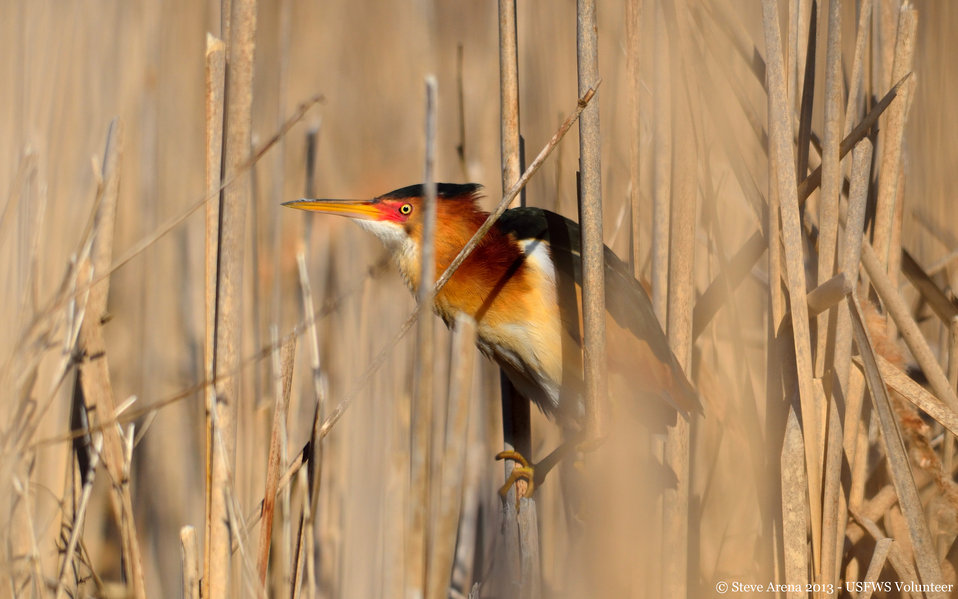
Least Bittern (Ixobrychus exilis) - male

Least Bittern, Great Meadows NWR, Concord, MA

Credit: Steve Arena/USFWS

04 May 2013